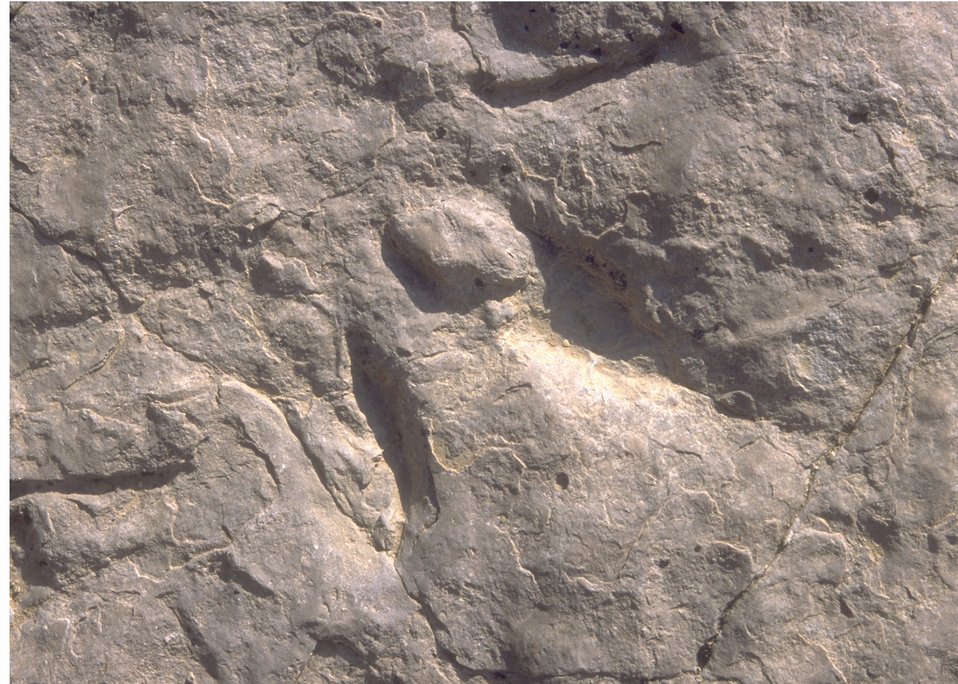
Detail of dinosaur tracks at the Red Gulch Dinosaur Tracksite, Worland Field Office.